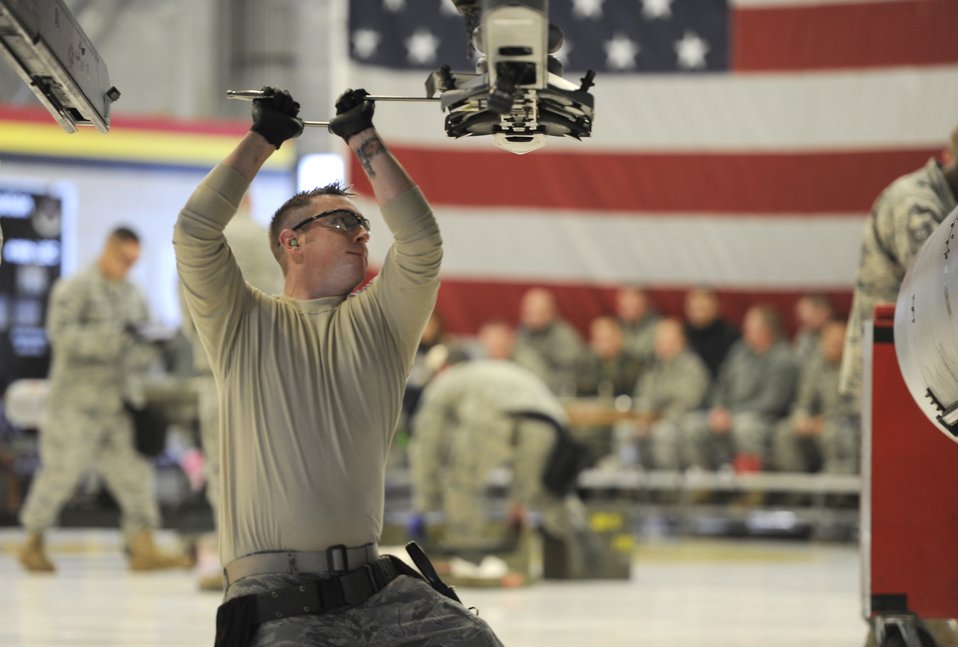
Do it fast, do it precise

Tech. Sgt. Jarrod Rogers prepares to load ordnance onto an F-16 Fighting Falcon during a load crew of the year competition Dec. 17, 2010, at Hill Air Force Base, Utah. The competition gave three maintenance squadrons on Hill AFB a chance to showcase their efficiency against each other while being judged for accuracy and speed.